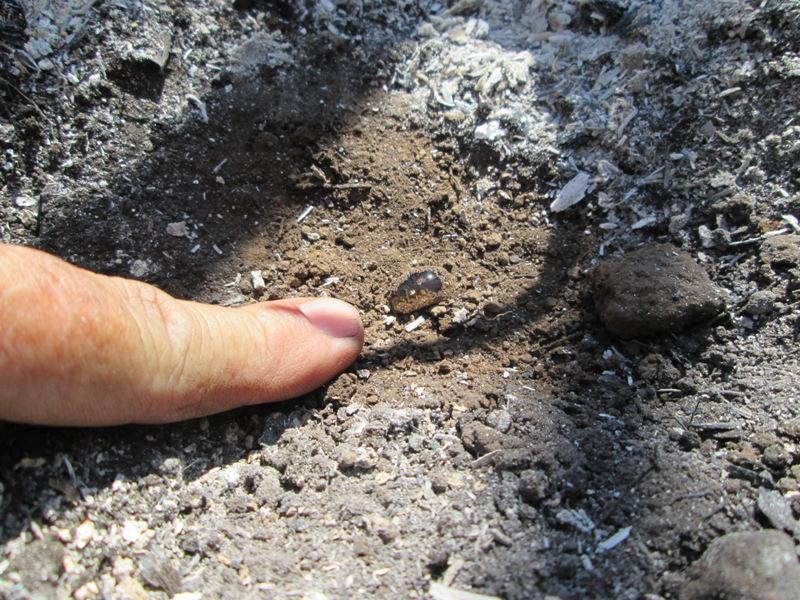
This is an example of soil water repellency damage from the Rim Fire. Soil water repellency (hydrophobicity) reduces the affinity of soils to absorb moisture, which has detrimental and often costly implications for plant growth. Water repellency includes the reduced infiltration capacity of soils, enhanced overland flow and accelerated soil erosion, uneven wetting patterns, development of preferential flow and the accelerated leaching of agrichemicals. BAER is a rapid assessment of burned watersheds by a BAER team to identify imminent post-wildfire threats to human life and safety property and critical natural or cultural resources on National Forest System lands and take immediate actions to implement emergency stabilization measures before the first major storms. Fires result in loss of vegetation exposure of soil to erosion and increased water runoff that may lead to flooding increased sediment debris flows and damage to critical natural and cultural resources. BAER team members implement seeding and mulching installation to prevent erosion, erect temporary water run-off control structures that will protect recovering areas, and installation of warning signs, replace safety related facilities, remove safety hazards, prevent permanent loss of habitat for threatened and endangered species, and prevent the spread of noxious weeds and protect critical cultural resources. The Rim Fire in the Stanislaus National Forest near in California began on Aug. 17, 2013 and is under investigation. The fire has consumed approximately 256,169 acres and is 84% contained.